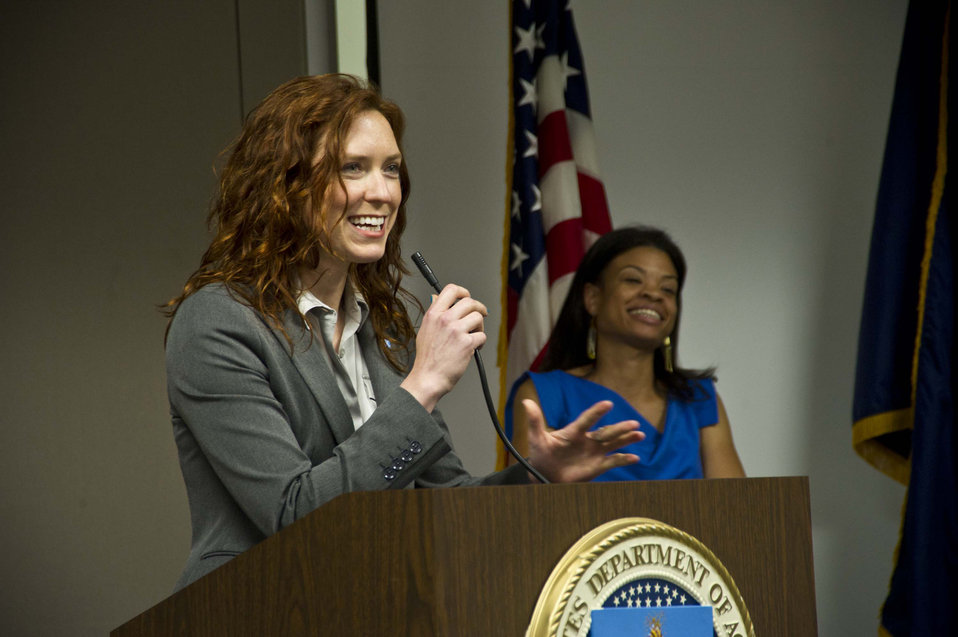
U.S. Department of Agriculture (USDA) Deputy Under Secretary for Marketing and Regulatory Programs (MRP) Rebecca Blue joins Animal and Plant Health Inspection Service (APHIS) employees at the celebration of the 40th Anniversary of the Agency’s creation on May 16, 2012.